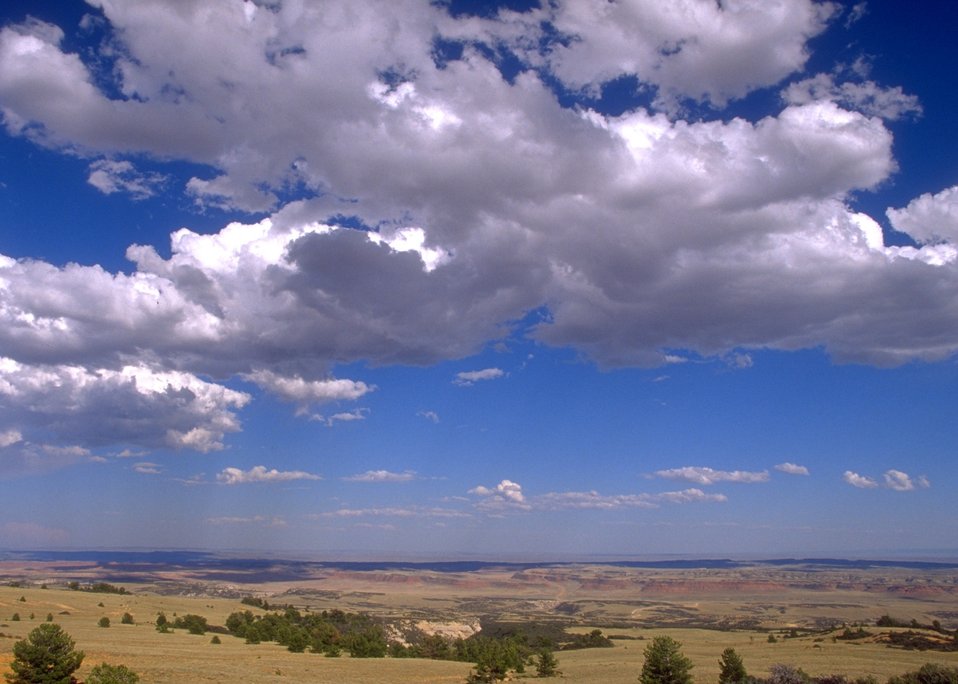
View of Red Wall from a distance, Buffalo Field Office.